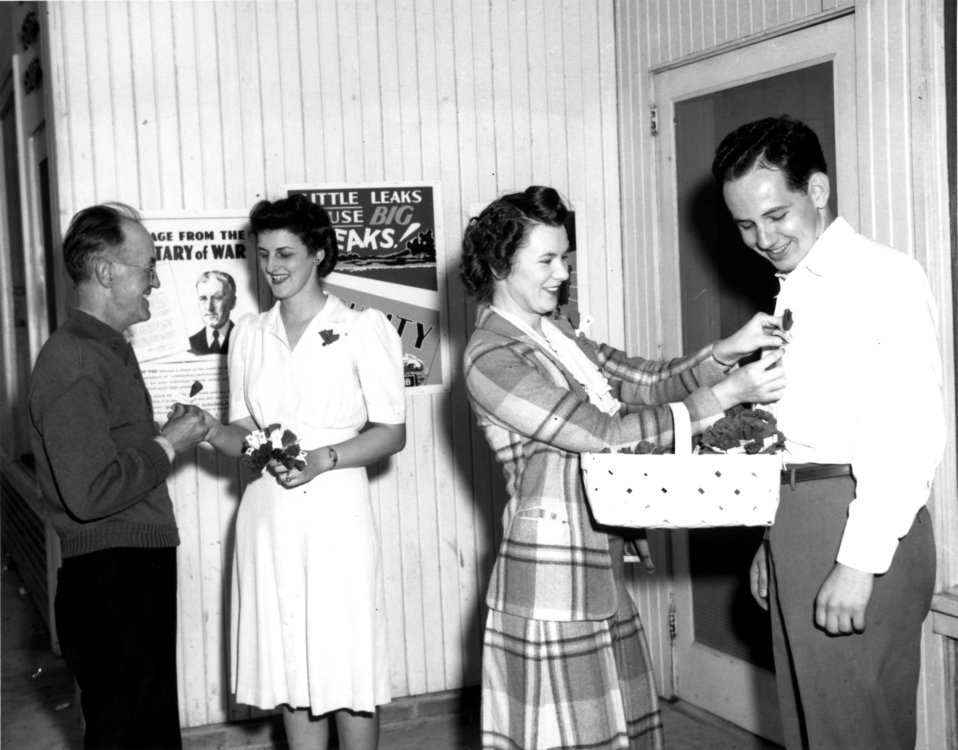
Daily Life at Oak Ridge